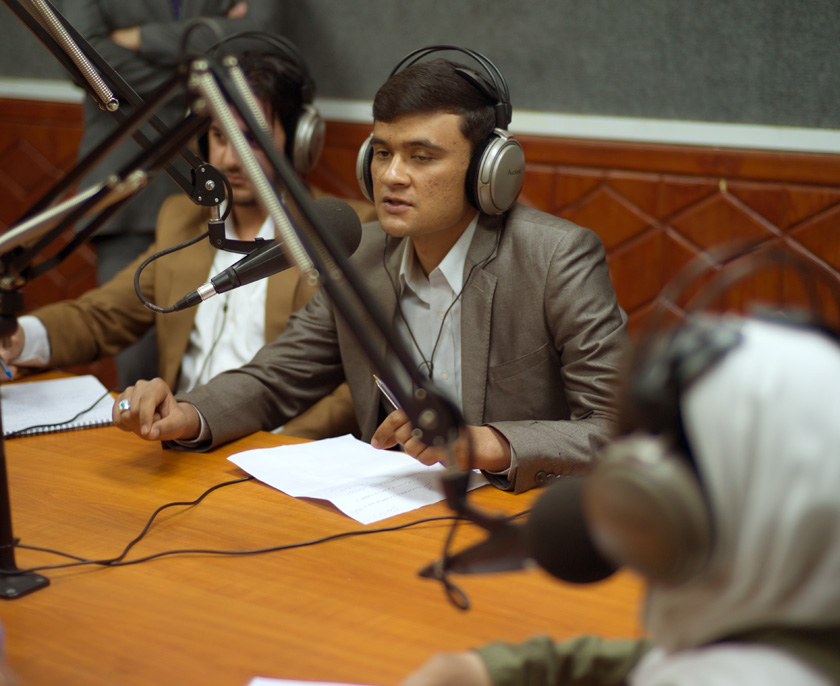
L1002768Refrigerator